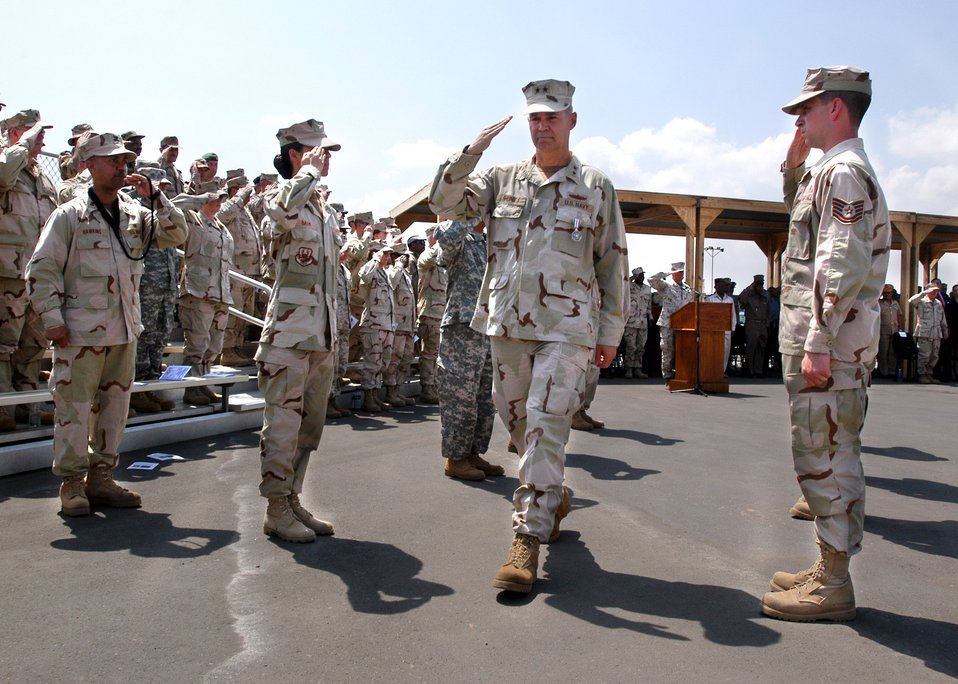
CJTF-HOA Change of Command

Rear Adm. Richard Hunt returns a salute at the conclusion of the Combined Joint Task Force - Horn of Africa change-of-command ceremony on Feb. 14. Admiral Hunt passed command of the task force to Rear Adm. James Hart.